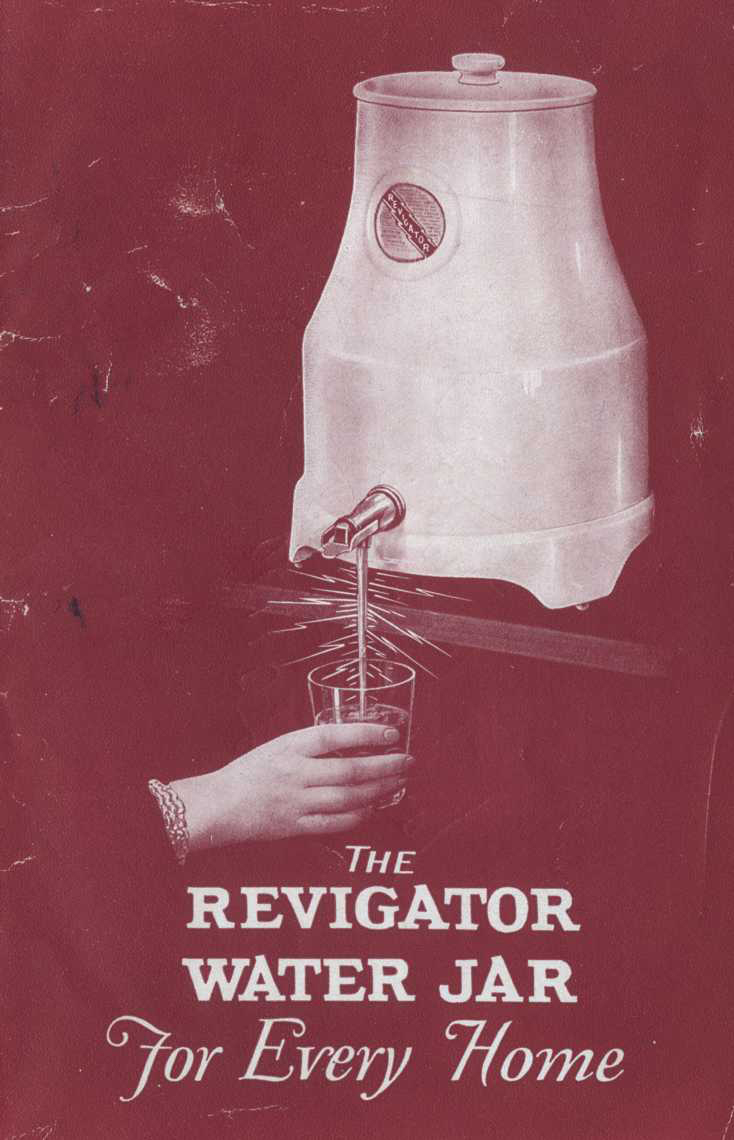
Radioactivity; Revigator

The inventors of the Revigator claimed the device would restore the lost element of water 'radio-activity,' which 'both creates cellular energy and removes cellular poisons.' Despite the obvious risk associated with ingesting radioactive substances, researchers at Mount Saint Mary's University in Emmitsburg, Md., working with NIST, discovered that heavy metals dissolved in the water posed the greatest danger.